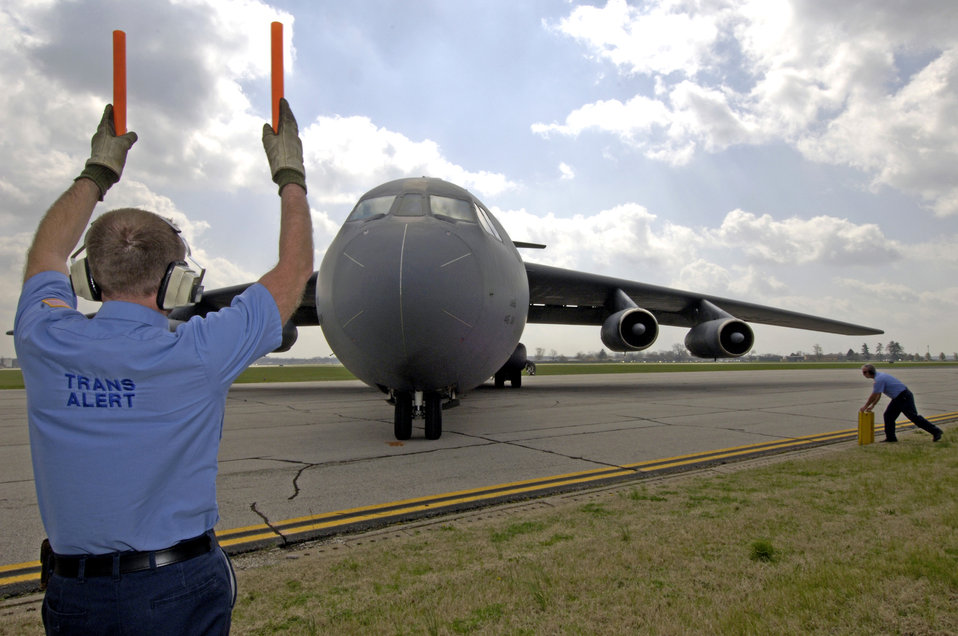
Final flight

Bill Murphy marshals a C-141C Starlifter from the 445th Airlift Wing on the flightline at Scott Air Force Base, Ill., on Friday, April 7, 2006. The aircraft, tail number 67-0166, made its final flight. It will take its place among other Air Mobility Command aircraft at the heritage airpark being built this year. Mr. Murphy is with the 375th Airlift Wing's transient alert section. The 445th, based at Wright-Patterson Air Force Base, Ohio, is converting from the Starlifter to the C-5 Galaxy.